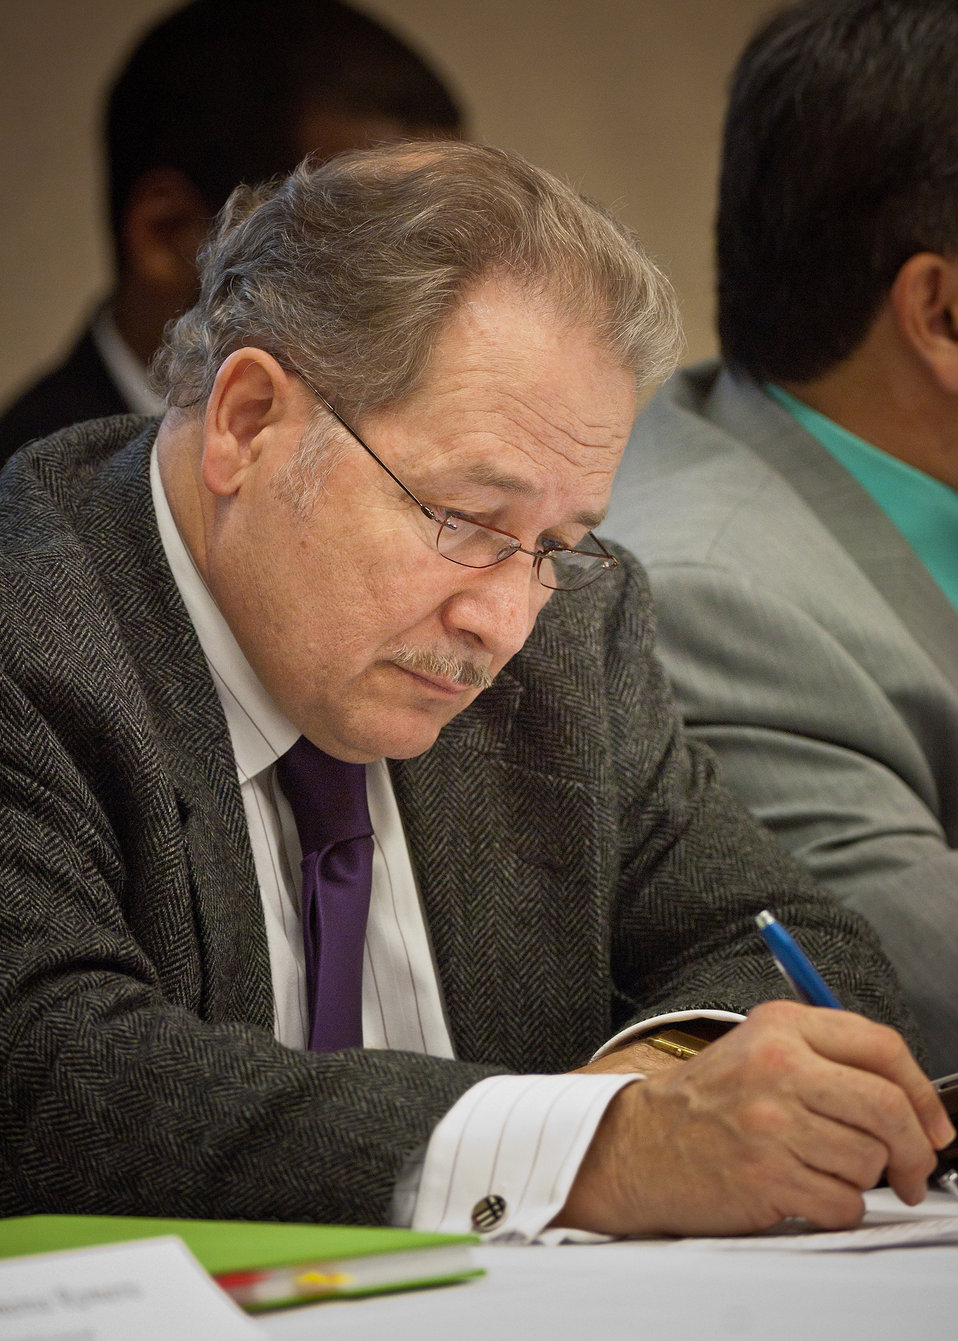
Robert Curtis, President; Sin Nombre (No Name) takes notes at the United States Department of Agriculture Hispanic Roundtable at the United States Department of Agriculture, Monday, December 5, 2011 in Washington, DC. The roundtable focused on recruitment, retention and employee development for the purpose of developing the USDA Hispanic recruitment Plan. The roundtable hosted several national Hispanic partners and recognized USDA Hispanic organizations and associations.